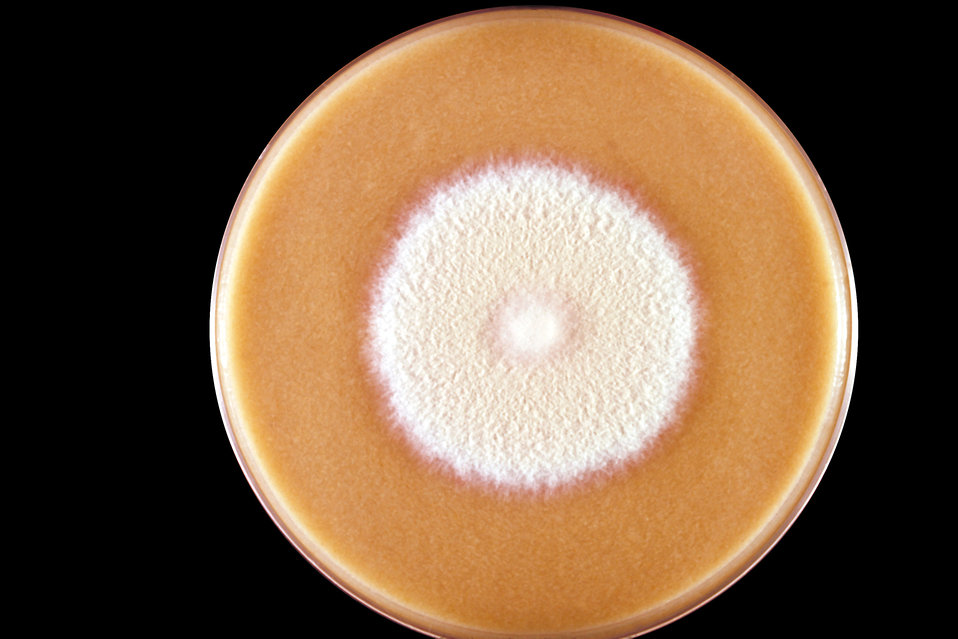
This is a top view of a cereal agar plate culture growing a colony of Microsporum persicolor fungus.